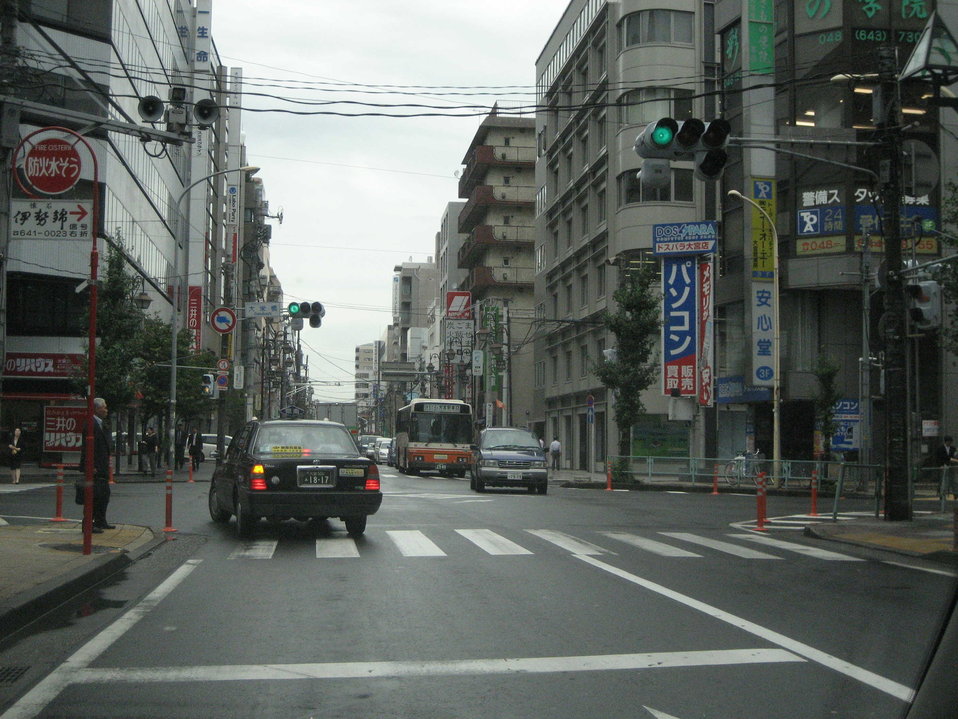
日本語: 大栄橋交差点